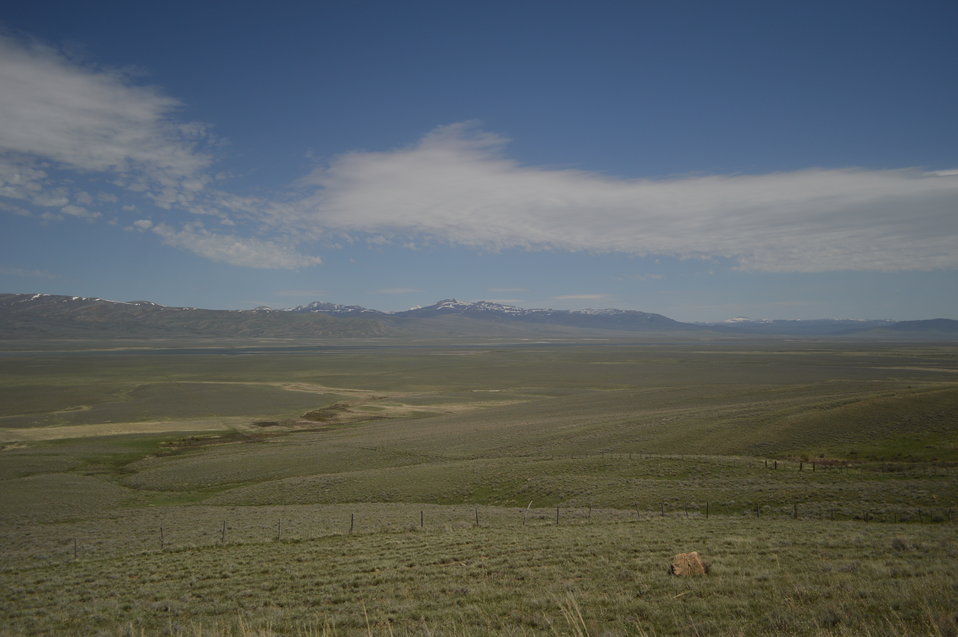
Regional Leadership Visit to Montana 2014